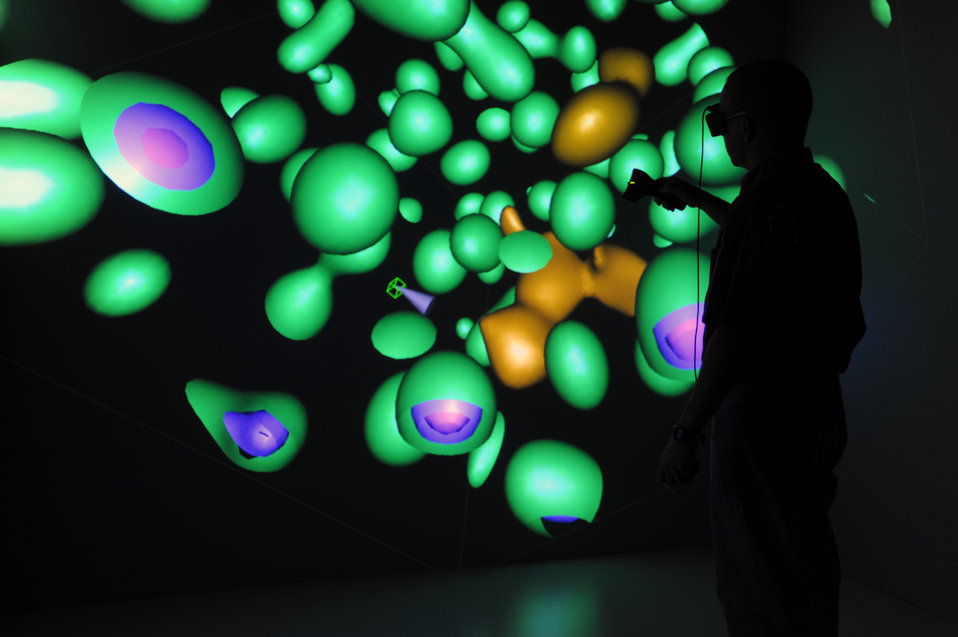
Computer Assisted Virtual Environment (CAVE) technology at INL's Center for Advanced Energy Studies was developed in the 1990s by researchers at the Electronic Visualization Laboratory at the University of Illinois-Chicago.